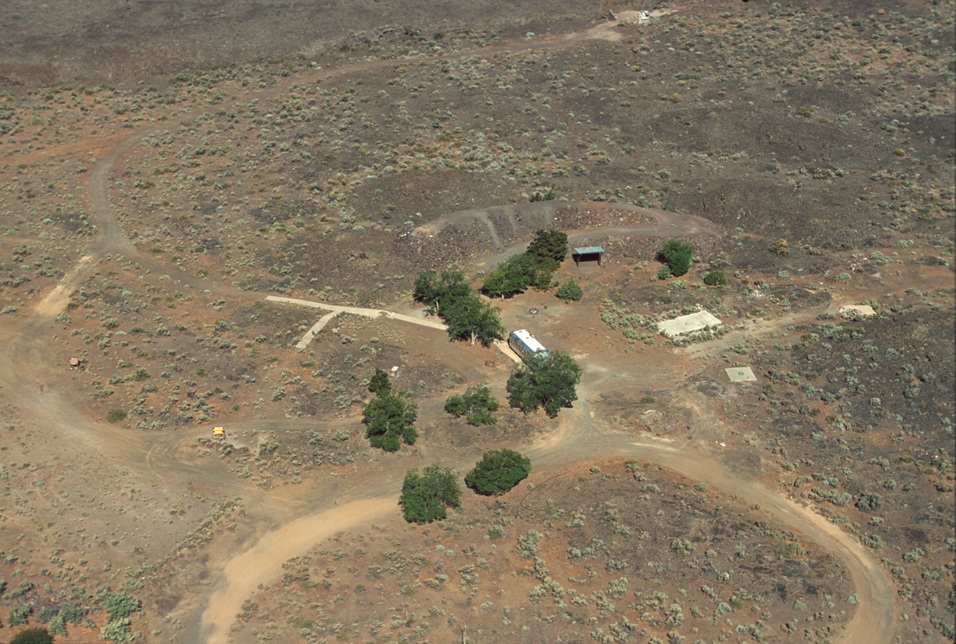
Shoshone Field Office USRD Upper Snake River District